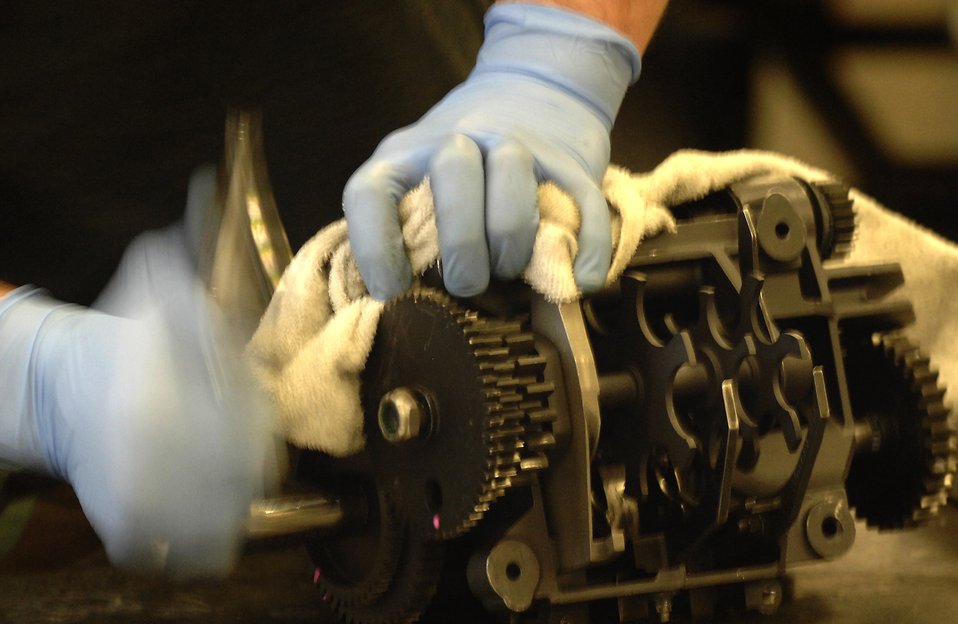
Attention to detail

Staff Sgt. Angel Rodriguez assembles the drum exit unit of an F-16 Fighting Falcon gun system Feb. 6 at Aviano AB, Italy. Sergeant Rodriguez is an aircraft armament system journeyman with the 31st Maintenance Squadron Armament Flight. The flight is responsible for the maintenance of F-16 weapons systems.